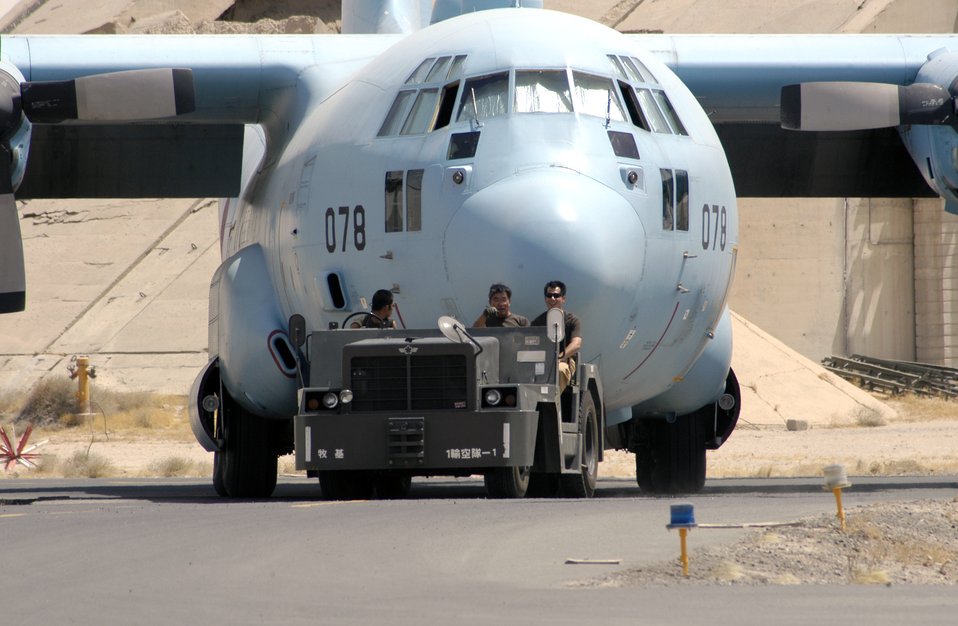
Japanese military key member of coalition

Maintainers from the Japan Air Self-Defense Force's Iraq Reconstruction Support Airlift Wing tow one of their C-130s from the flightline at a forward operating base in Southwest Asia.